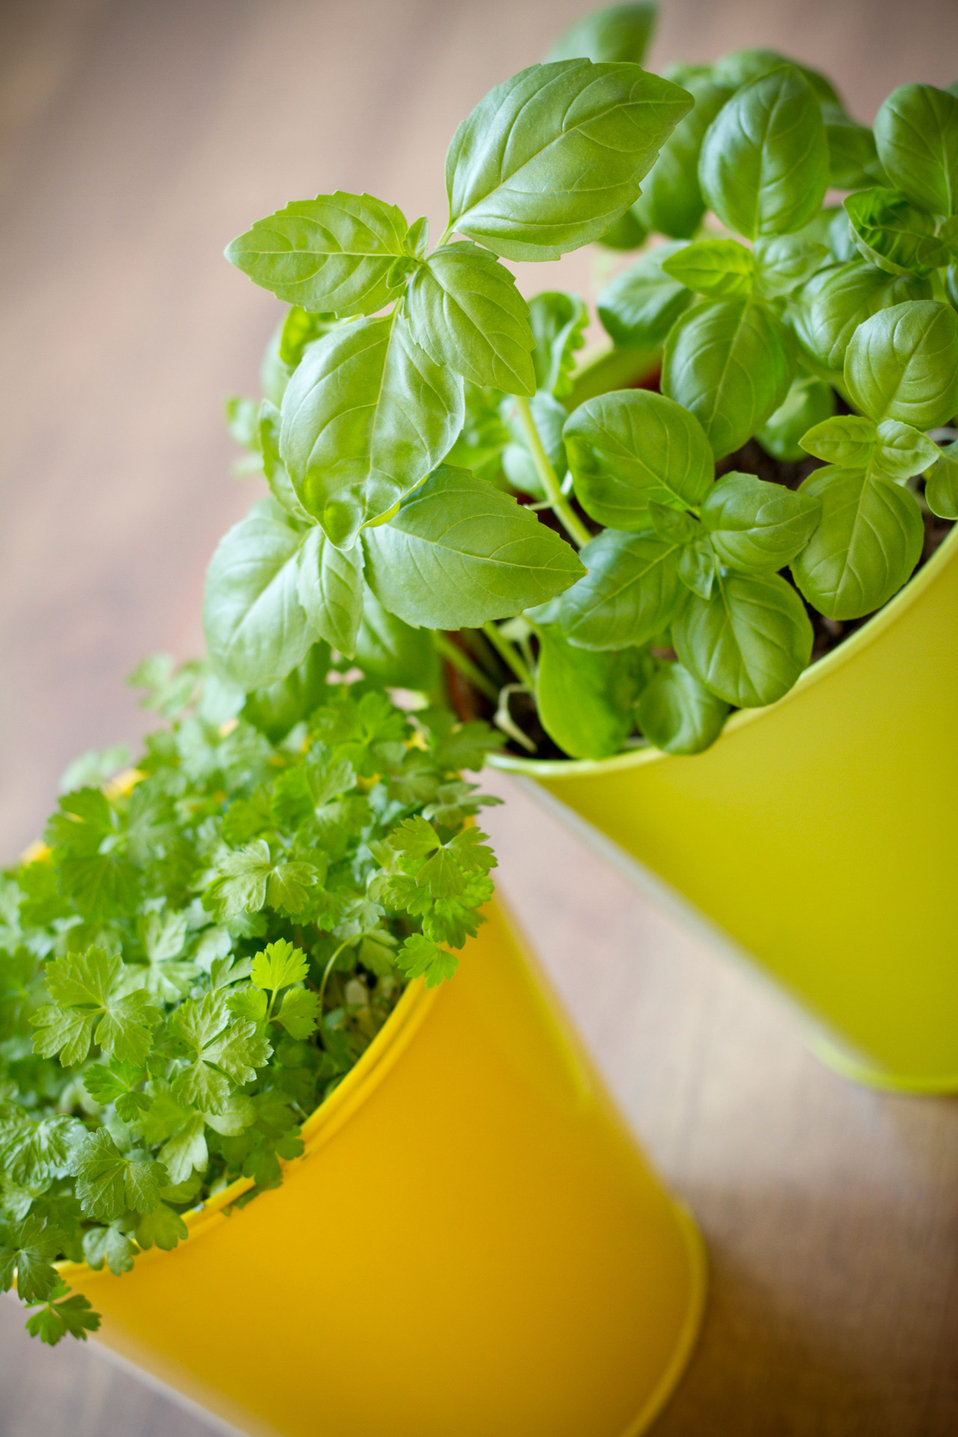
Herbs in the pots.